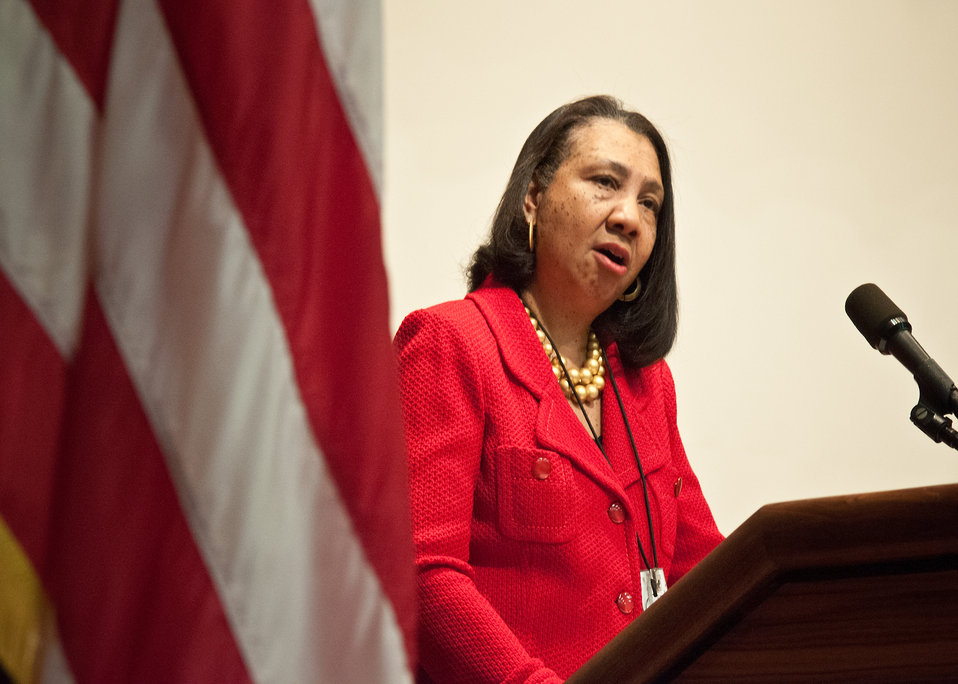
Dr. Alma Hobbs, Associate Assistant Secretary for Administration, Mistress of Ceremonies welcomes employees and guests to the United States Department of Agriculture Black History Month celebration “Black Women in American Culture and History” at the U.S. Department of Agriculture in Washington, D.C. on Thursday, February 16, 2012.